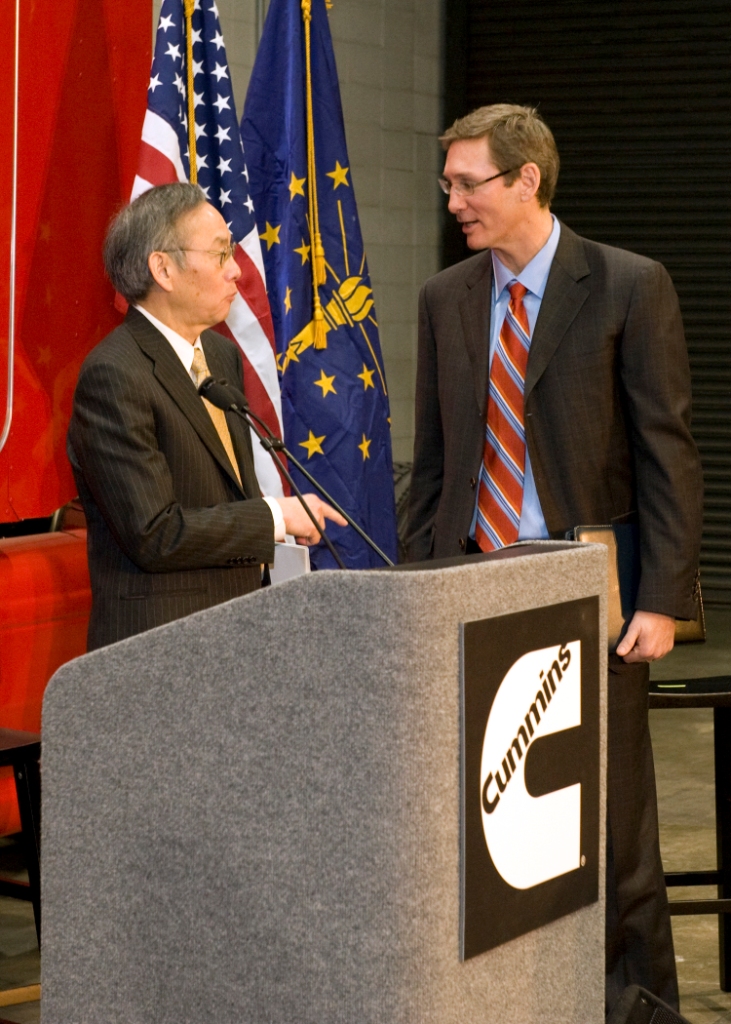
DOE event - Chu 2